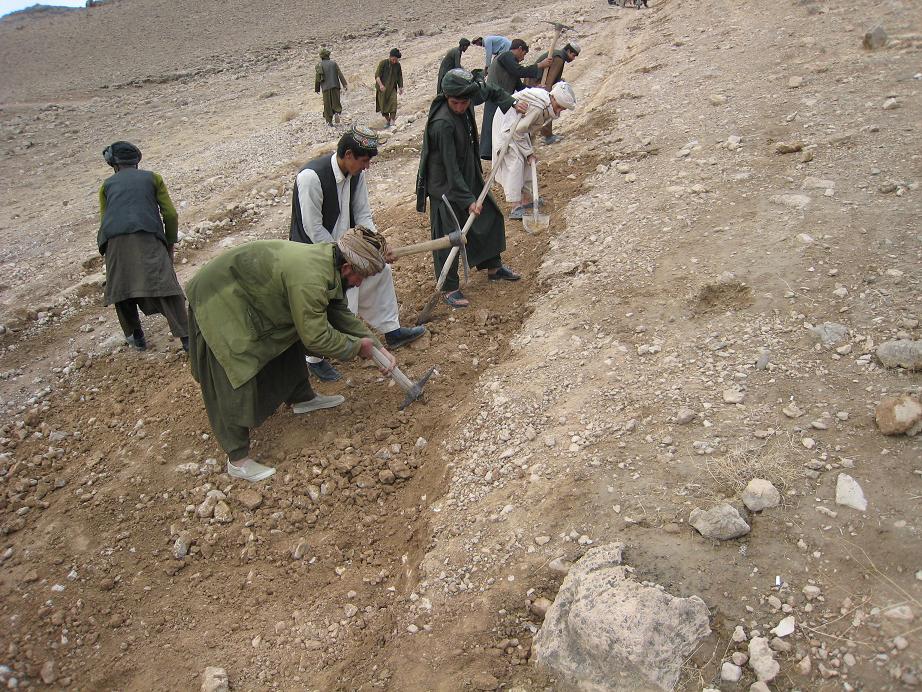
at work